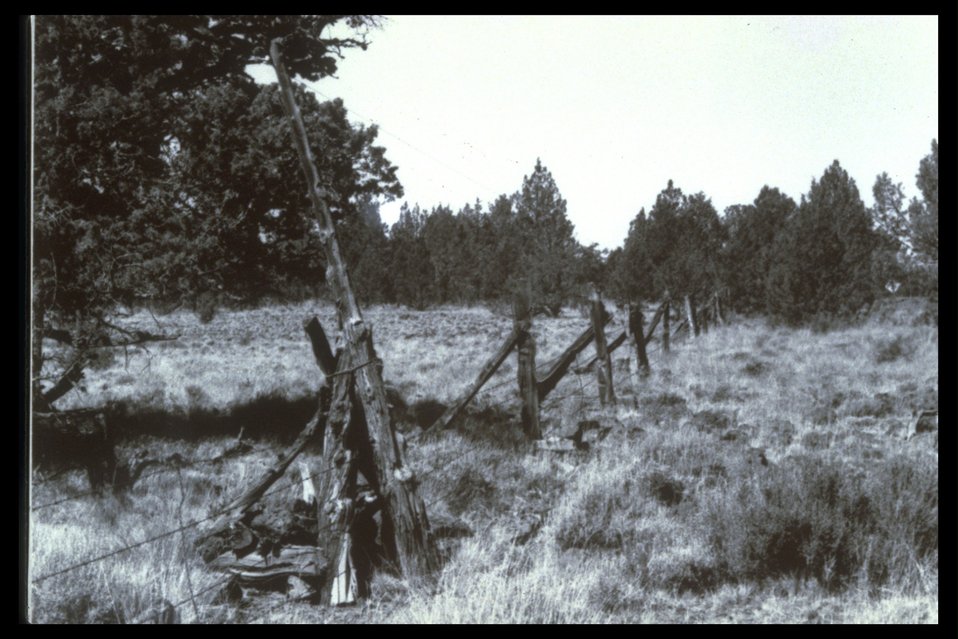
Black & White photo of range juniper/sage with juniper pole fence.